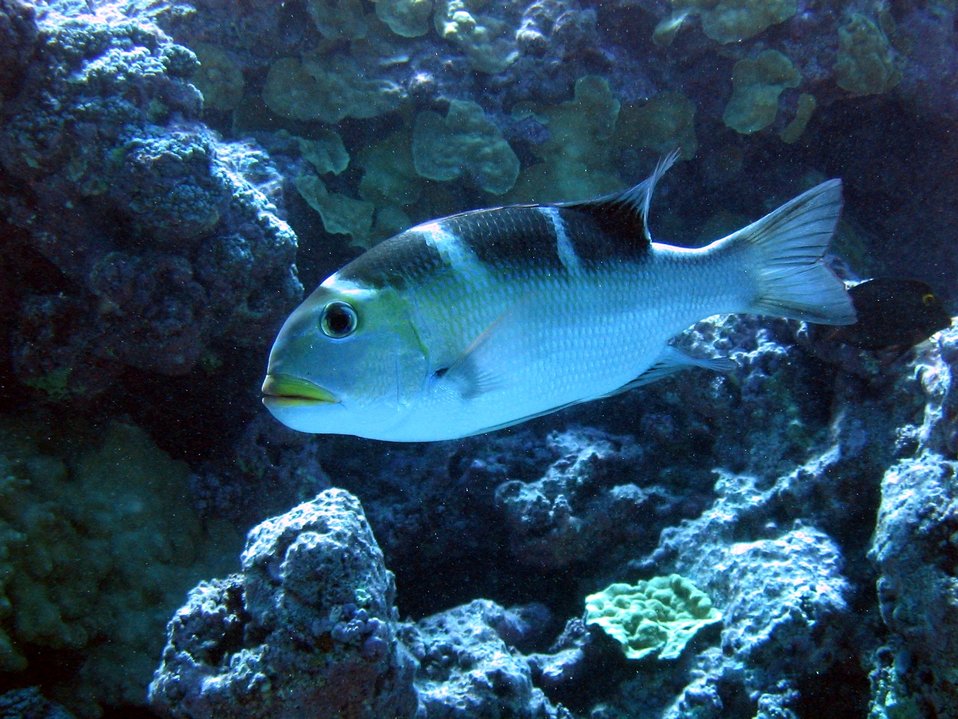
Bigeye emperor (Monotaxis grandoculis). Hawaiian name is mu.